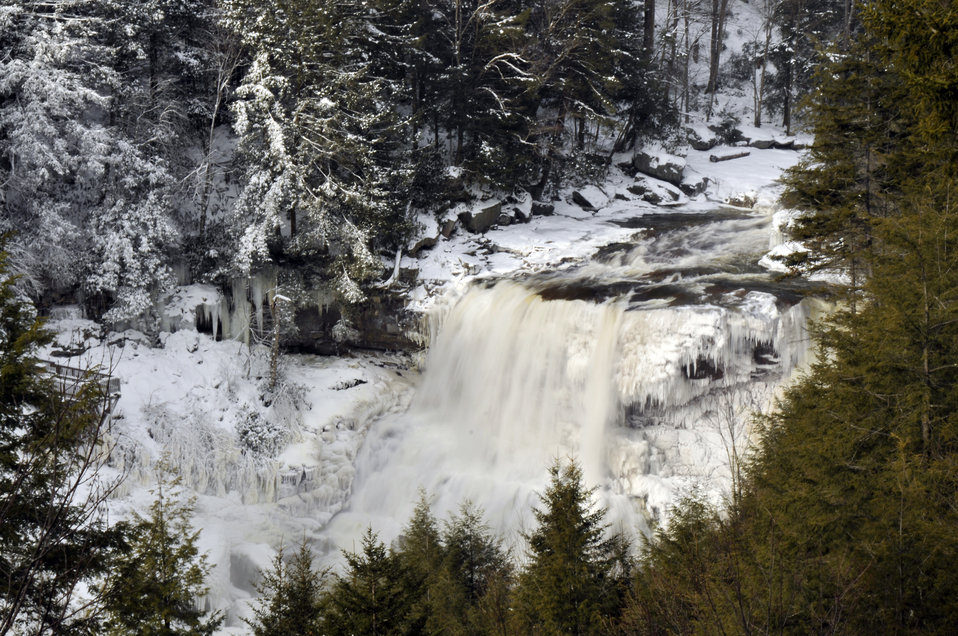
A stream runs through the snow-covered Monongahela National Forest in Davis, West Virginia on January 29, 2010.